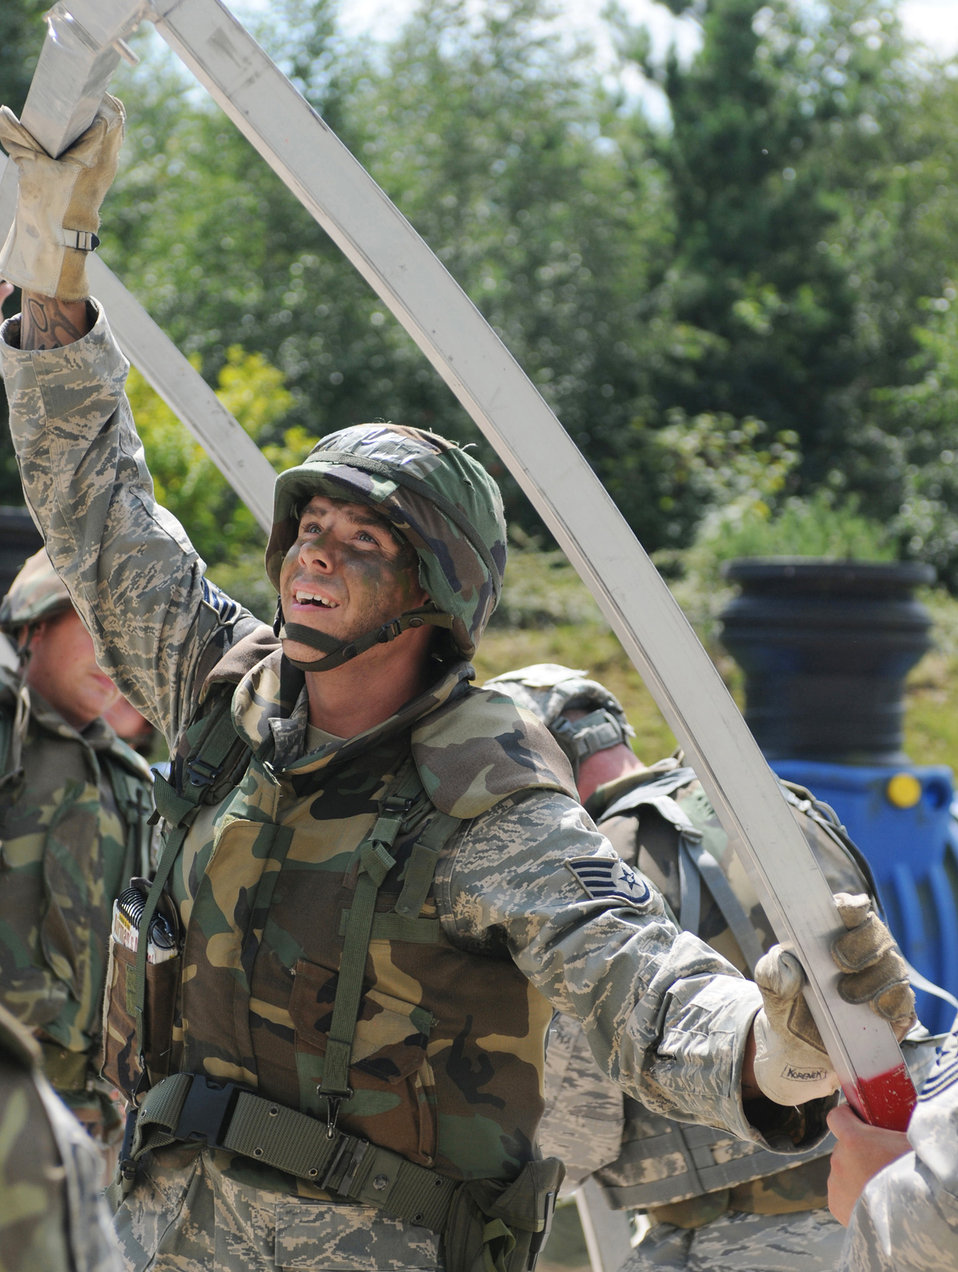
Silver Flag Exercise

Staff Sgt. Johnathon Korenek helps assemble a small shelter system Aug. 1 during Silver Flag, a week-long training exercise at Ramstein Air Base, Germany. Silver Flag gives participants the basic contingency skills to set up a bed-down operation anywhere in the world. Sergeant Korenek is with the 31st Civil Engineer Squadron at Aviano Air Base, Italy.